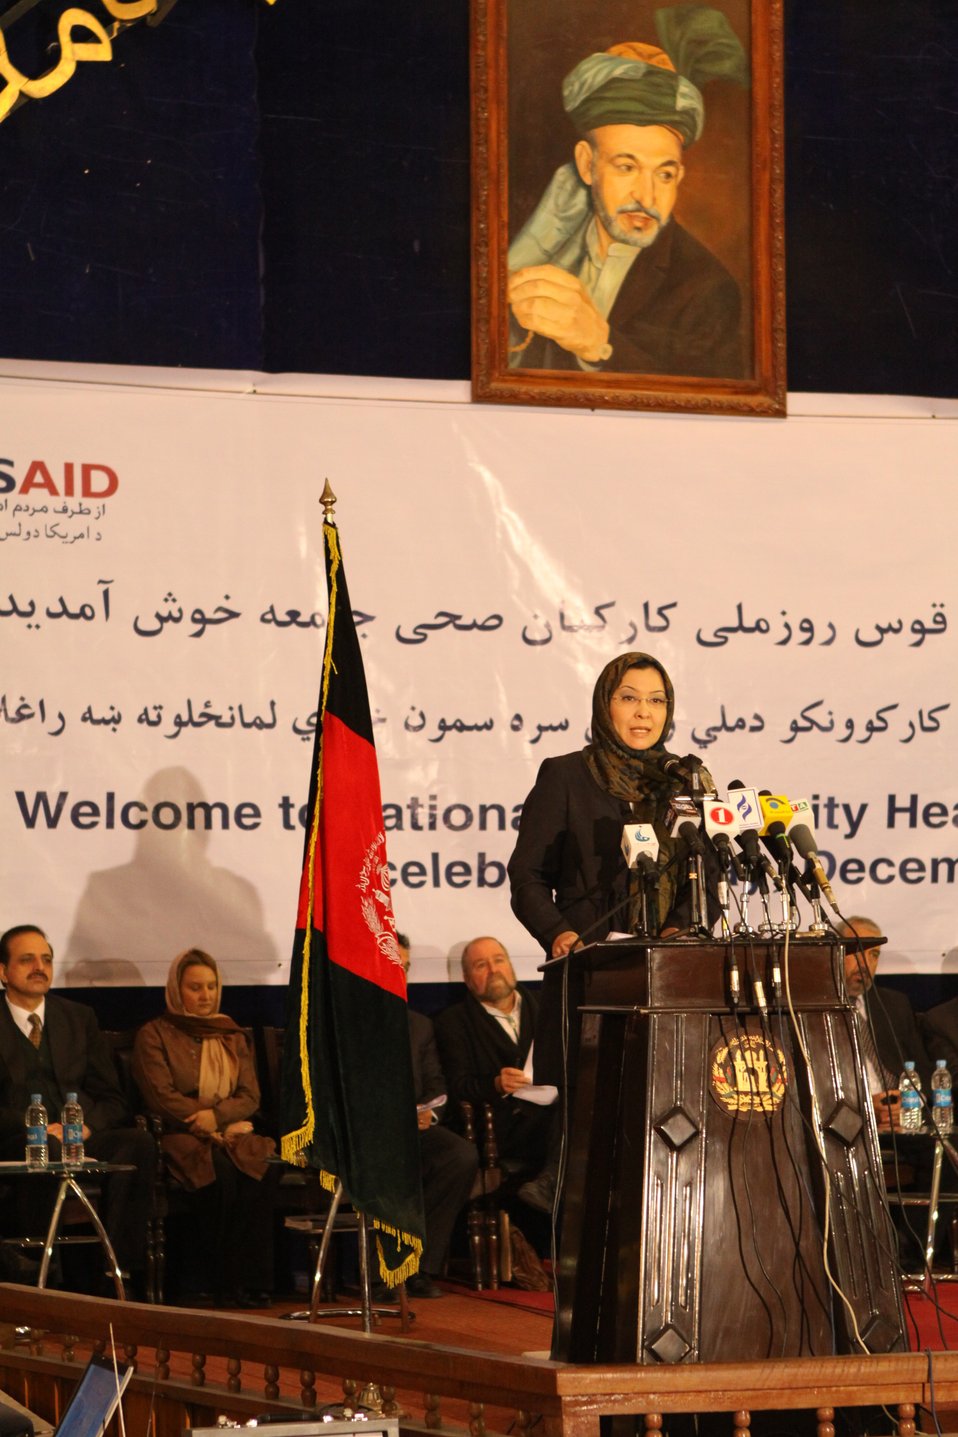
Community Health Workers Celebrated

Kabul, Afghanistan | December 5, 2010 — In support of the United Nations designated International Volunteer Day for Economic and Social Development, Afghanistan’s Ministry of Public Health celebrated its annual Community Health Worker Day today. Acting Minister of Public Health Dr. Suraya Dalil, USAID Senior Deputy Mission Director Robert Hellyer, other government officials, and international donors joined in recognizing the critical contribution of community health workers in Afghanistan and encouraging them to continue their voluntary support to their communities.
The event praised the contributions of the more than 22,000 volunteers throughout the country who deliver community level health-education, counseling, and services out of village health posts located in private homes. The Ministry of Public Health envisioned that community-based healthcare programs will actively encourage communities and families to adopt healthy lifestyles and behaviors, and provide families access to high quality and socially acceptable preventative medicine and life-saving services.
“We have 22,000 community health workers in Afghanistan that are able to implement the basic and standard medicines. They all have been trained through a job description,” said Minister Dalil. Addressing the health workers, she added, “I am proud and feel powerful that I have people like you.”
USAID-funded health projects collaborate closely with the Ministry of Public Health to improve the health and nutritional status of Afghans, provide quality primary healthcare, and promote healthy behaviors at the community and household-levels. USAID supported the training of more than 9,000 of the volunteer community health workers currently working in Afghanistan.
“On behalf of the American people, I congratulate the Community Health Workers for their diligence to gain the skills and knowledge necessary to serve their communities in this important role,” said USAID Senior Deputy Mission Director Hellyer. “USAID strongly supports community based health care and believes that quality community-based health services are essential to reaching Afghanistan’s Millennium Development Goals.”
To support the Basic Package of Health Services, USAID assisted in developing the community health worker training manual, helped train community health worker supervisors and master-trainers, facilitated in-service training, and produced and developed reporting tools, job aids, and education materials.